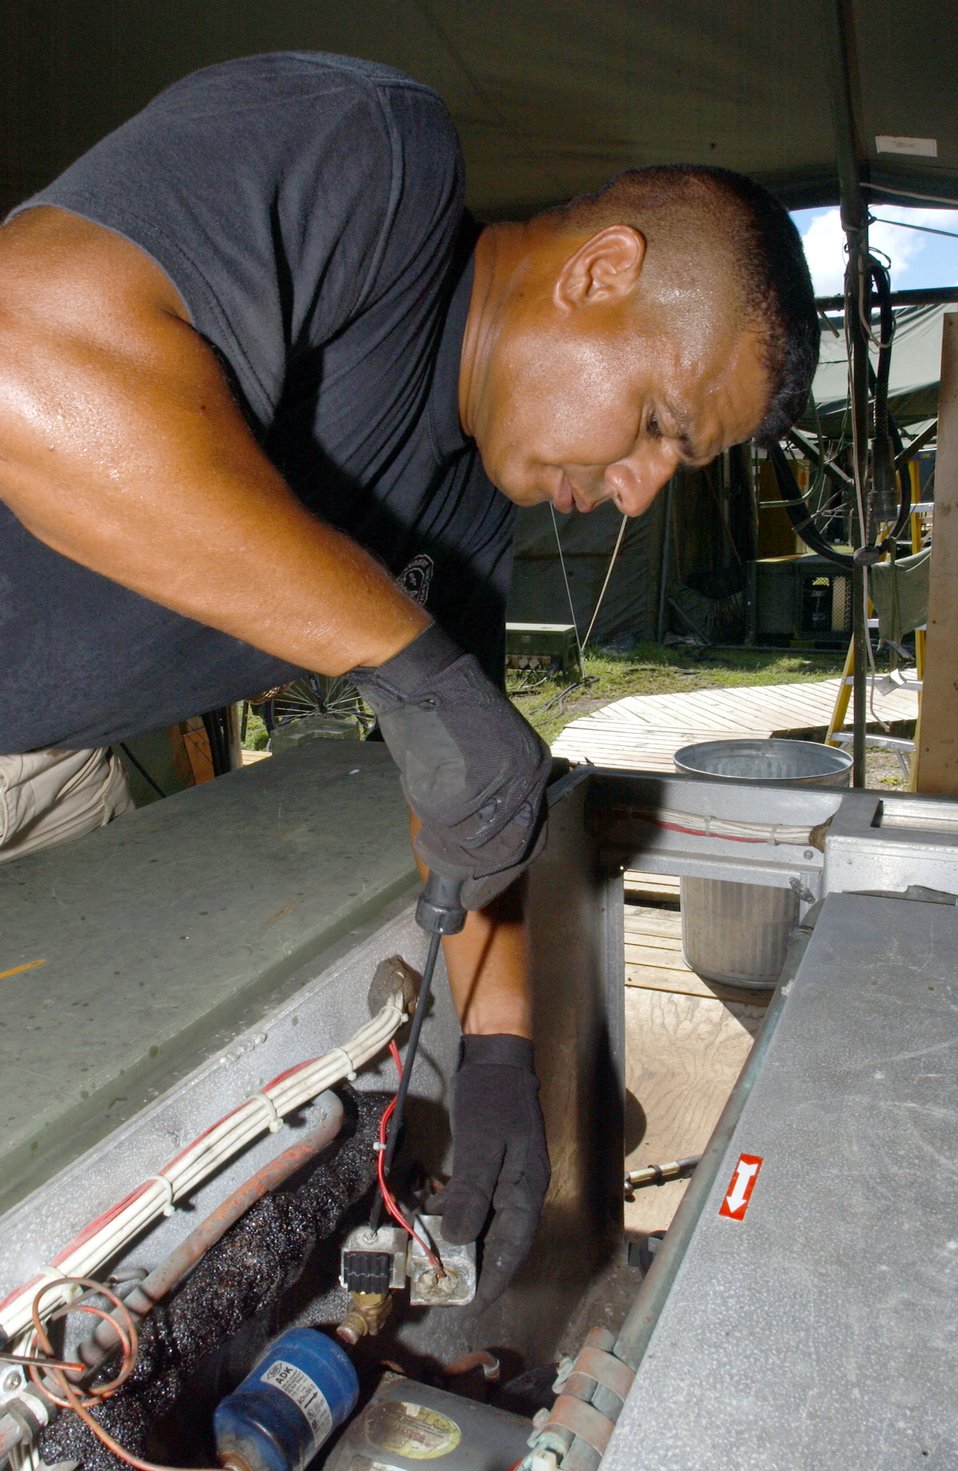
Guardsmen tackle challenges of keeping their cool

OPERATION ENDURING FREEDOM -- Master Sgt. Alex Gonzalez repairs an environmental control unit used to cool tents at a forward-deployed location. He is the 40th Expeditionary Civil Engineer Squadron's heating, ventilation, air conditioning and refrigeration flight superintendent and is deployed from Muniz Air National Guard Base, Puerto Rico.